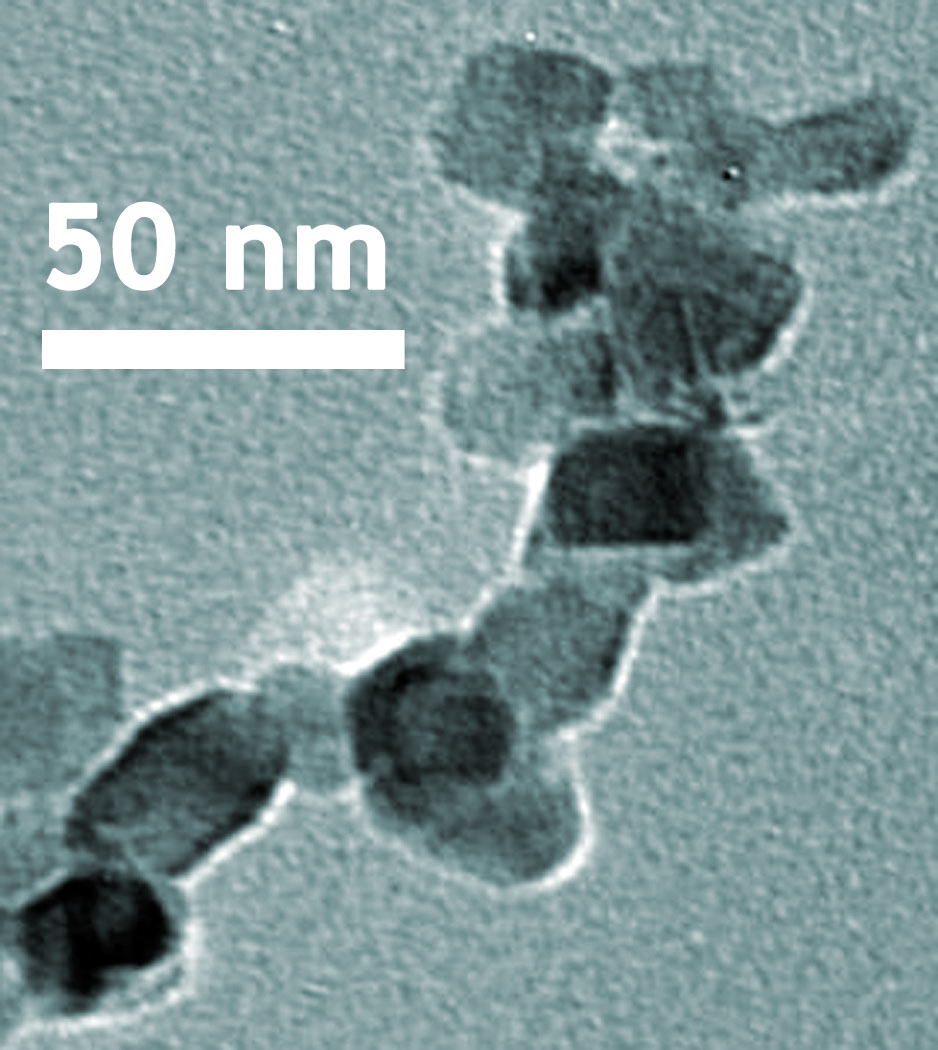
Nanoscale Crystalline Structure of Titanium Dioxide

TEM image shows the nanoscale crystalline structure of titanium dioxide in NIST SRM 1898 (color added for clarity.)